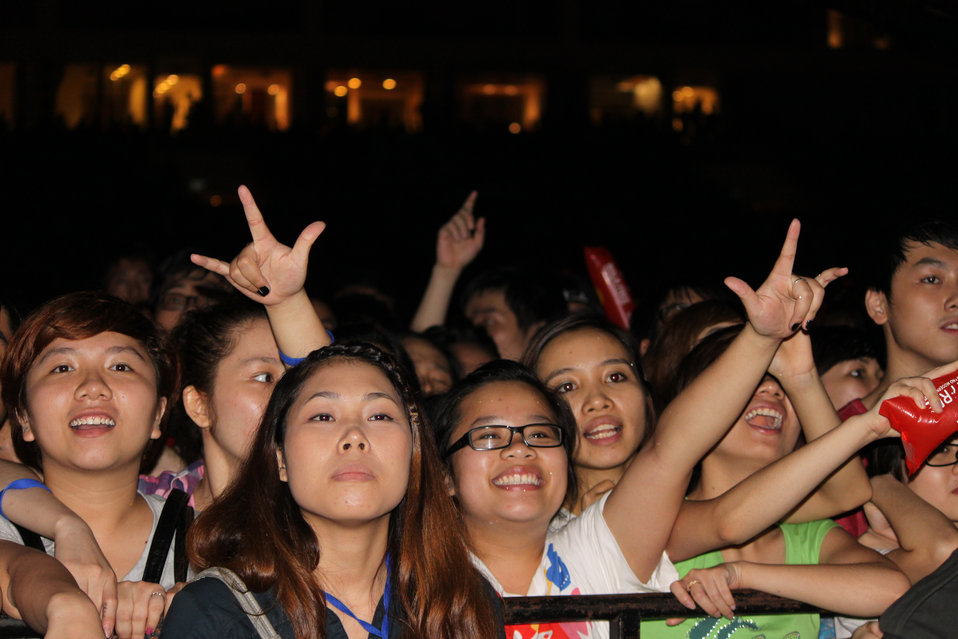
Young fans are so excited at the MTV Exit concert with strong messages against human trafficking

A great concert that attracts 40,000 fans in My Dinh Stadium in Hanoi with strong messages against human trafficking.